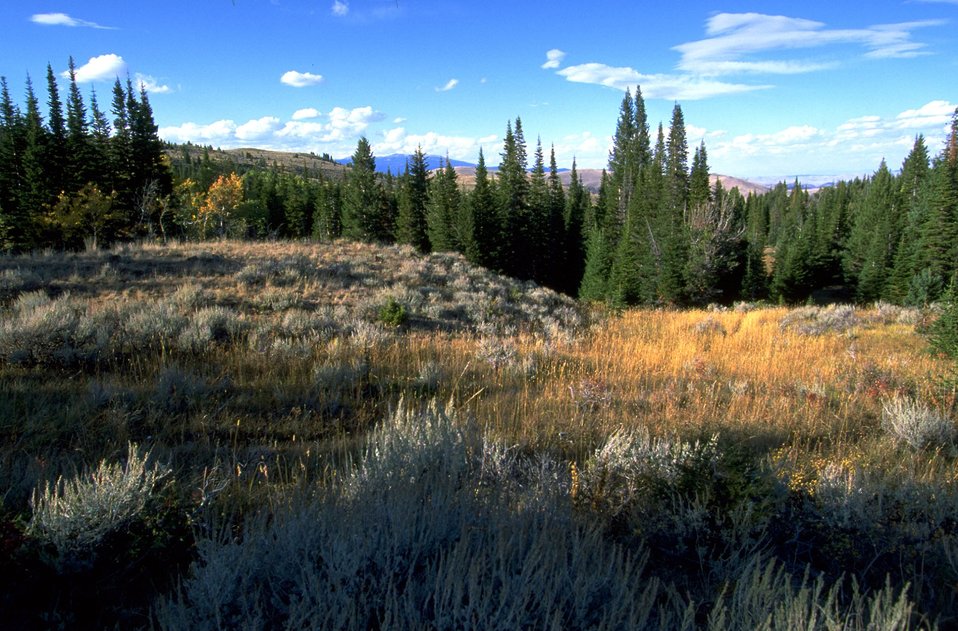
Sagebrush and grassy hillside